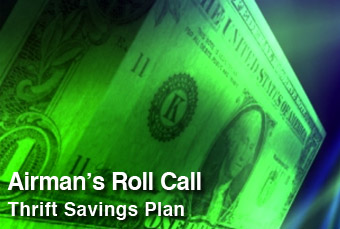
Airman's Roll Call: Thrift Savings Plan

The Federal Retirement Thrift Investment Board is a long-term retirement savings plan, which everyone should consider. It's a great supplement to military and civilian retirement plans.